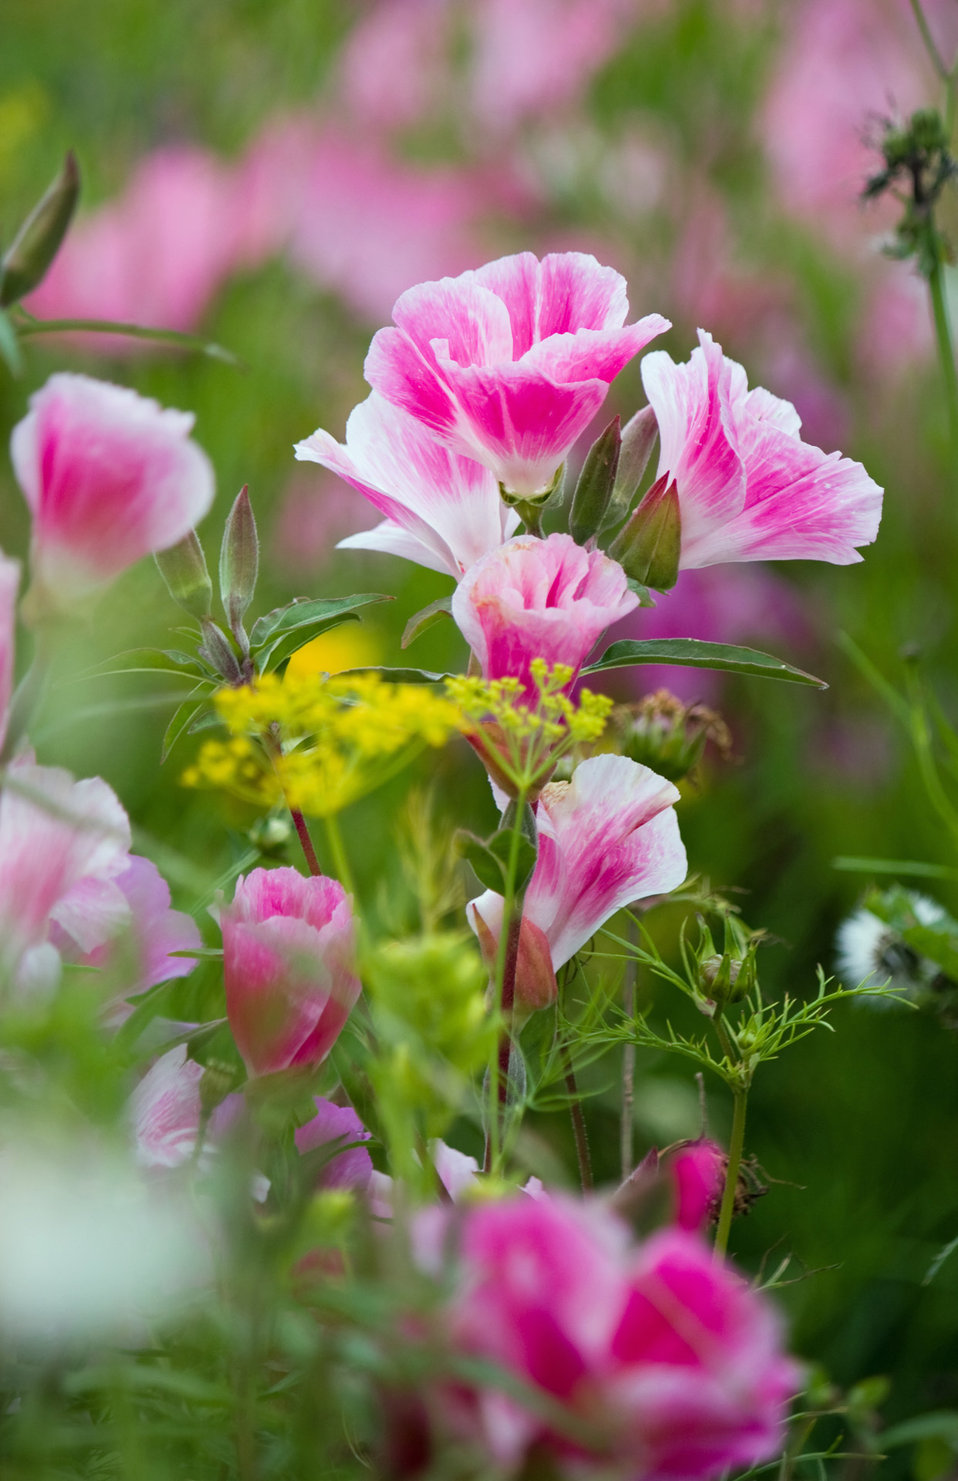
Wild flowers

Close-up of beautiful pink wild summer flowers.